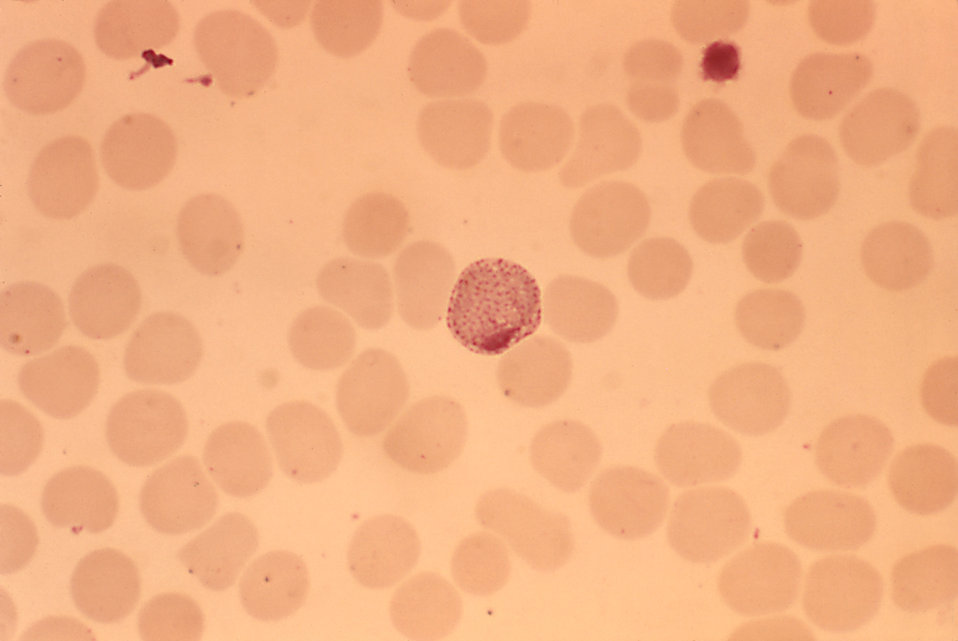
This blood smear photomicrograph depicts a Plasmodium vivax macrogametocyte.